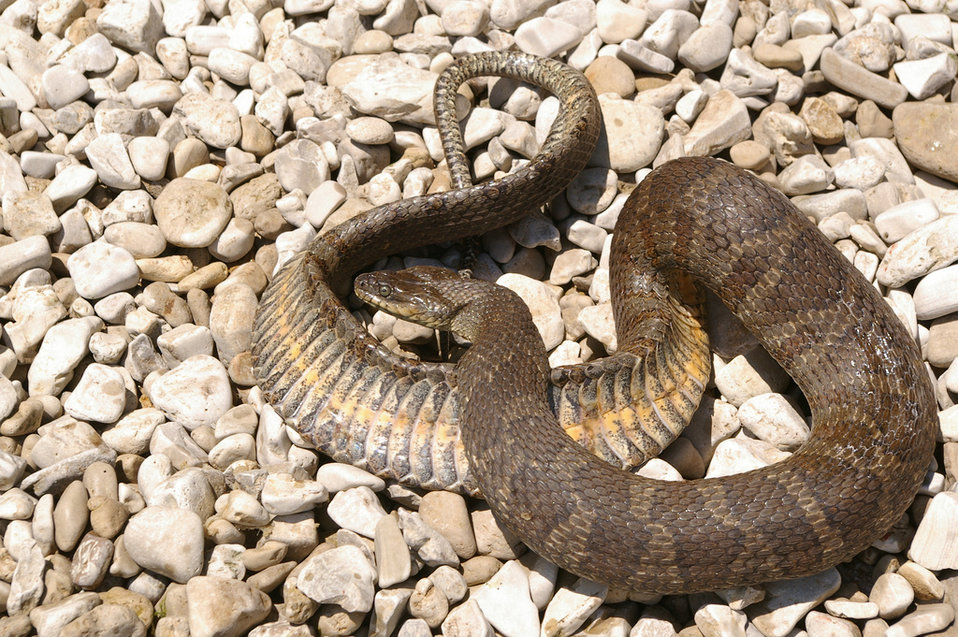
Recovered Lake Erie watersnake (Nerodia sipedon insularum)